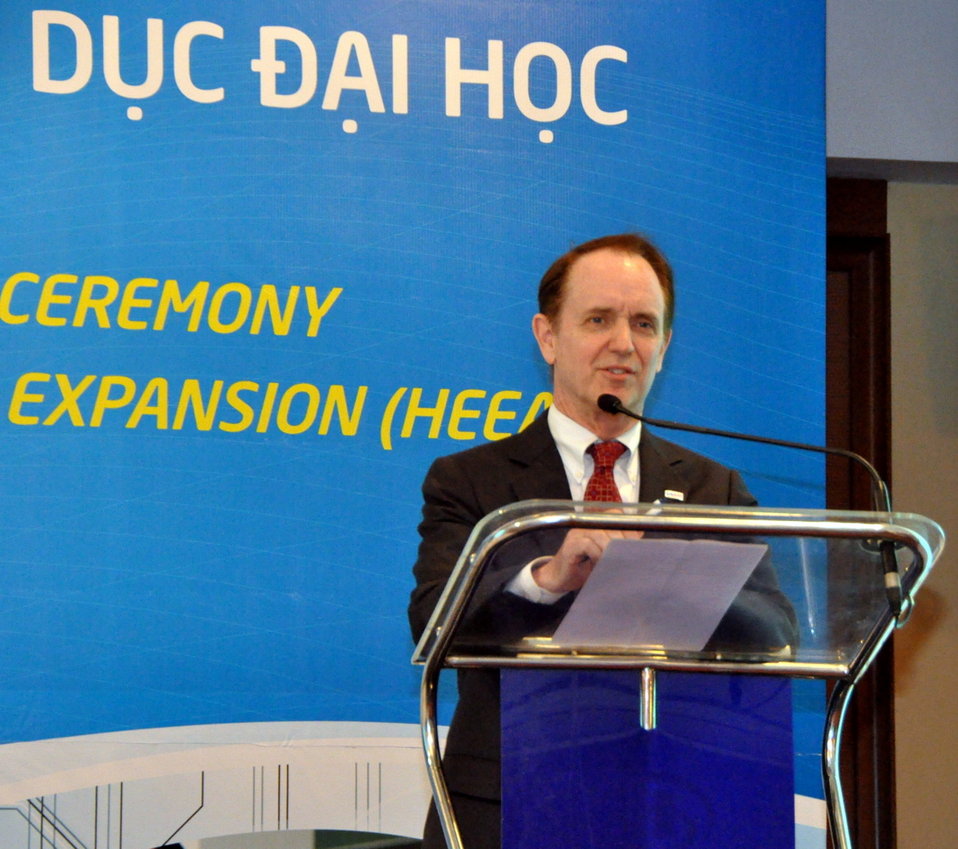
USAID Mission Director Francis Donovan at the Higher Engineering Education Alliance Program Expansion Launch

Hanoi, August 20, 2012.